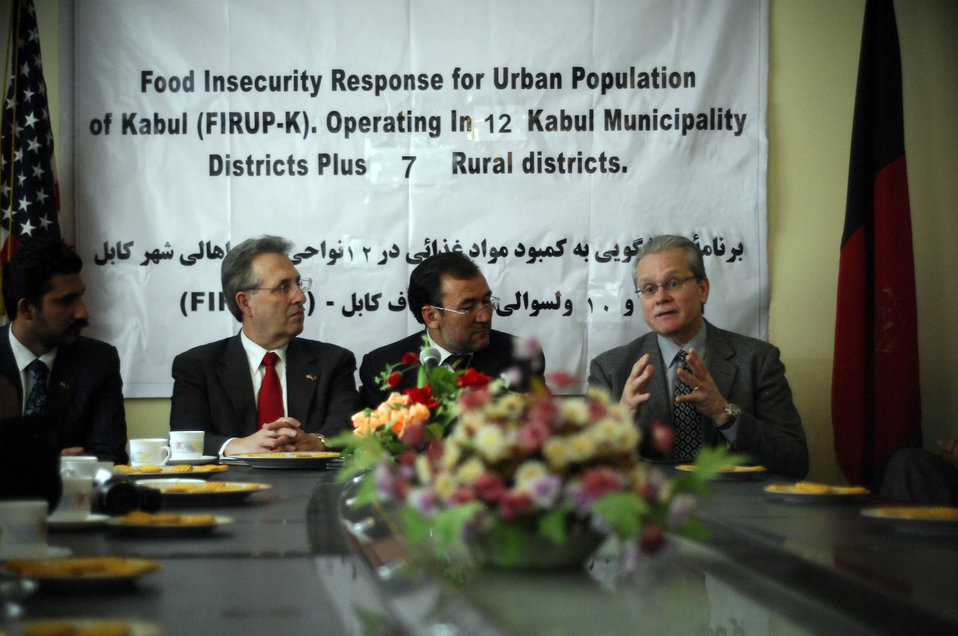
Care95 (1)